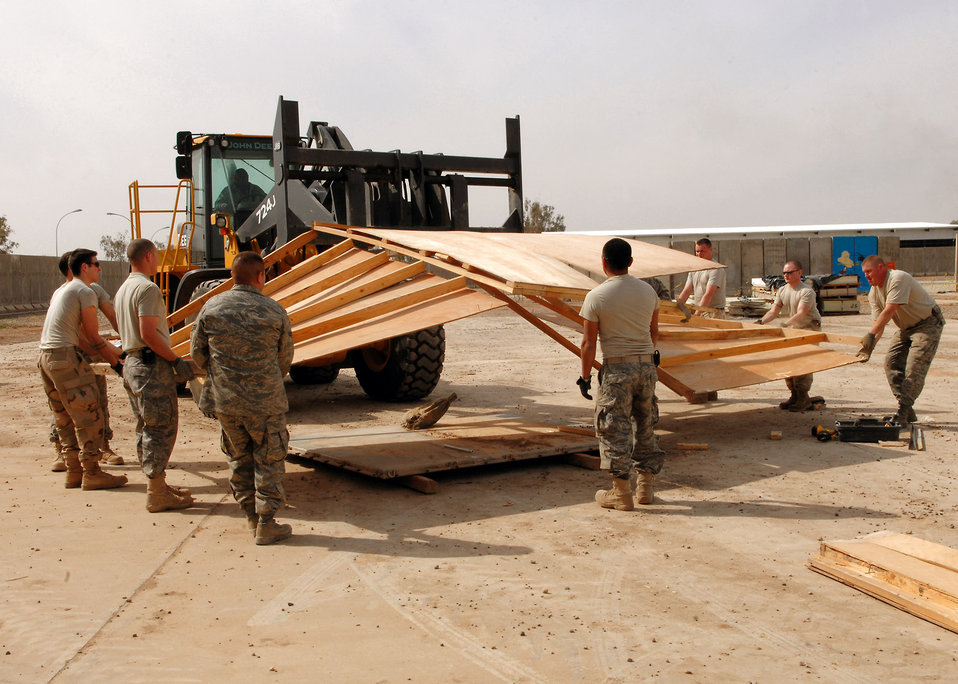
Temporary hospital finds permanent place in history

Members of the 332nd Expeditionary Civil Engineer Squadron pull apart the entry way of the old Air Force Theater Hospital emergency room tent Feb. 29 at Balad Air Base, Iraq. The entry will be shipped to the National Museum of Health and Medicine in Washington as part of an exhibit. The tent is slated for exhibition because it is known, by the medical community, as the place where the most American blood was spilled since the Vietnam War.